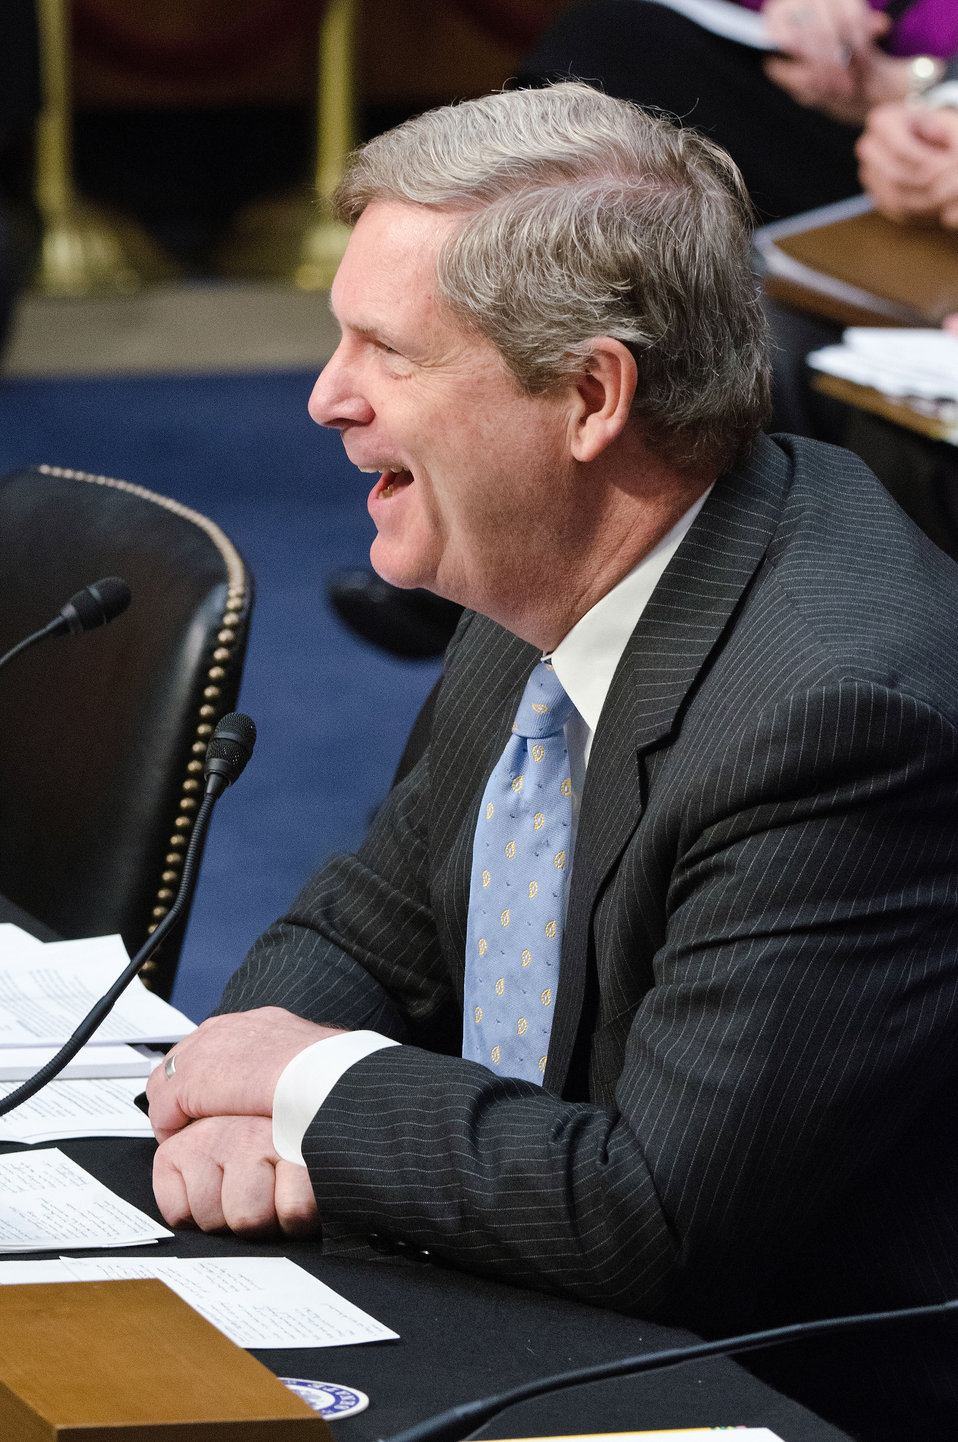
Agriculture Secretary Tom Vilsack reacts to humor from Senator Pat Roberts (KS) about college rivalry between Kansas and Iowa during Secretary Vilsack’s testimony on “Healthy Food Initiatives, Local Production and Nutrition before the Senate Agriculture Committee on Wednesday, March 7, 2012 in Washington, D.C.